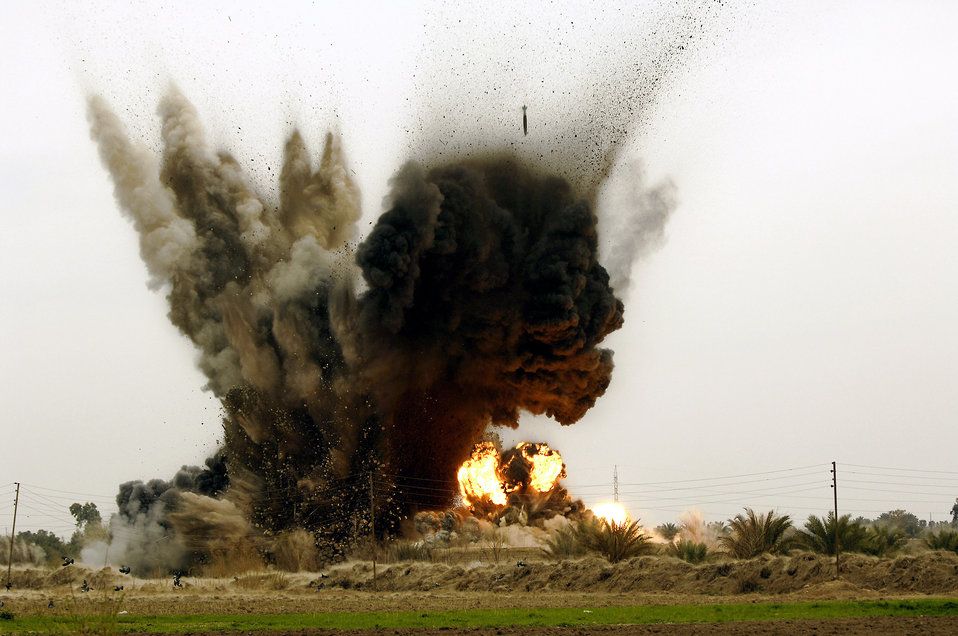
B-1B destroys al-Qaida torture compound in Iraq

An al-Qaida torture compound and prison is destroyed after being hit with six guided bomb unit-38 Joint Direct Attack Munitions from a B-1B Lancer at 2:07 p.m. March 10 in Zenbaraniyah, Iraq.